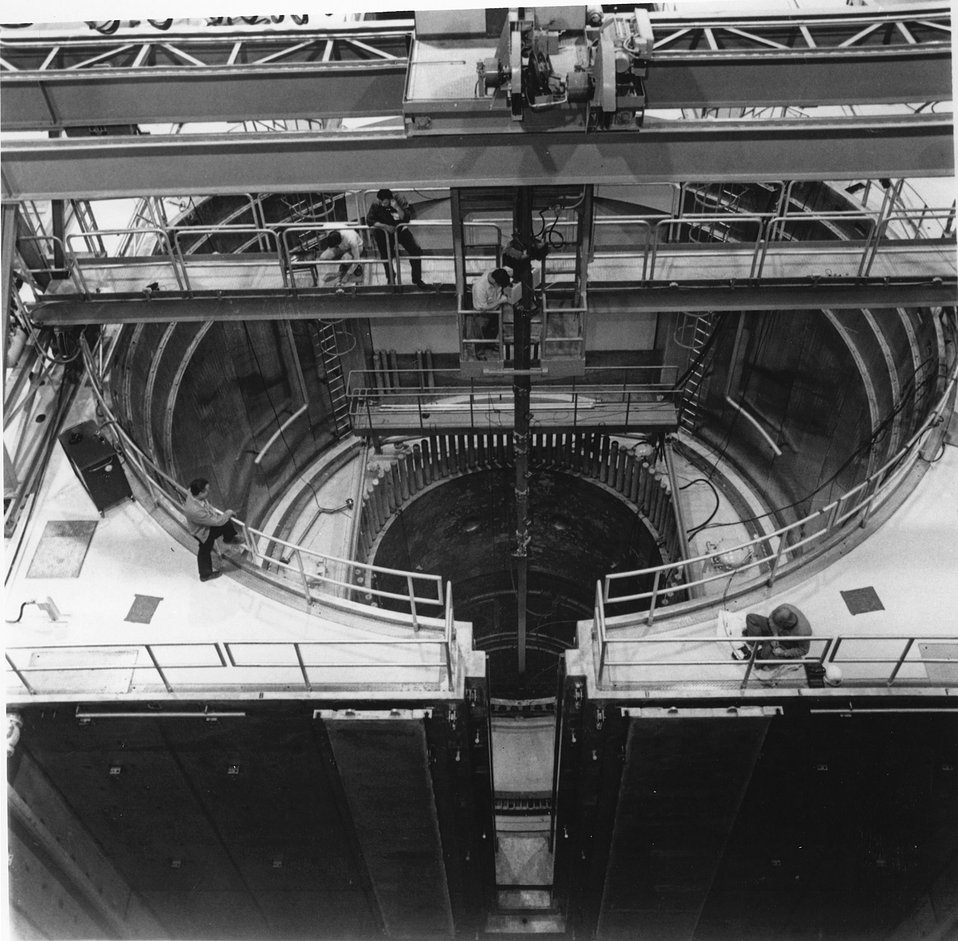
Operators of Commonwealth Edison Company's Dresden nuclear power station, near Morris, guide a fuel assembly into the reactor of one of the nuclear units. c. 1974